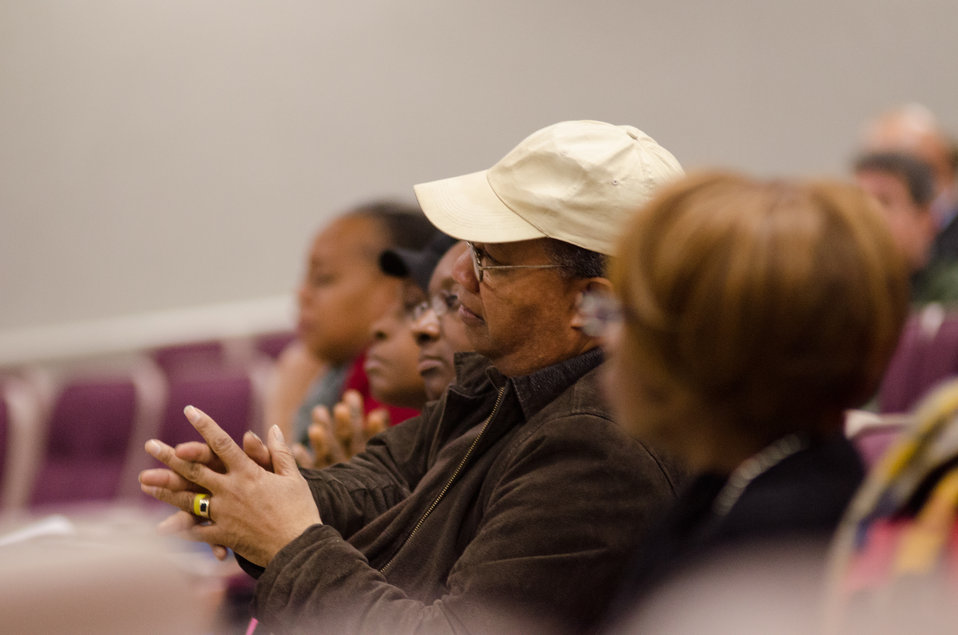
Farmers listened, questioned, took notes and gained a better understanding of resources available to them, at the “Virginia State University (VSU), U.S. Department of Agriculture (USDA) and Virginia Farmers Working Together” outreach workshop in the VSU, L. Douglas Wilder building on Thursday, March 7, 2013, in Petersburg, VA. Farmers shared and learned new ways to produce more and conduct better practices and planning of their family agriculture businesses.